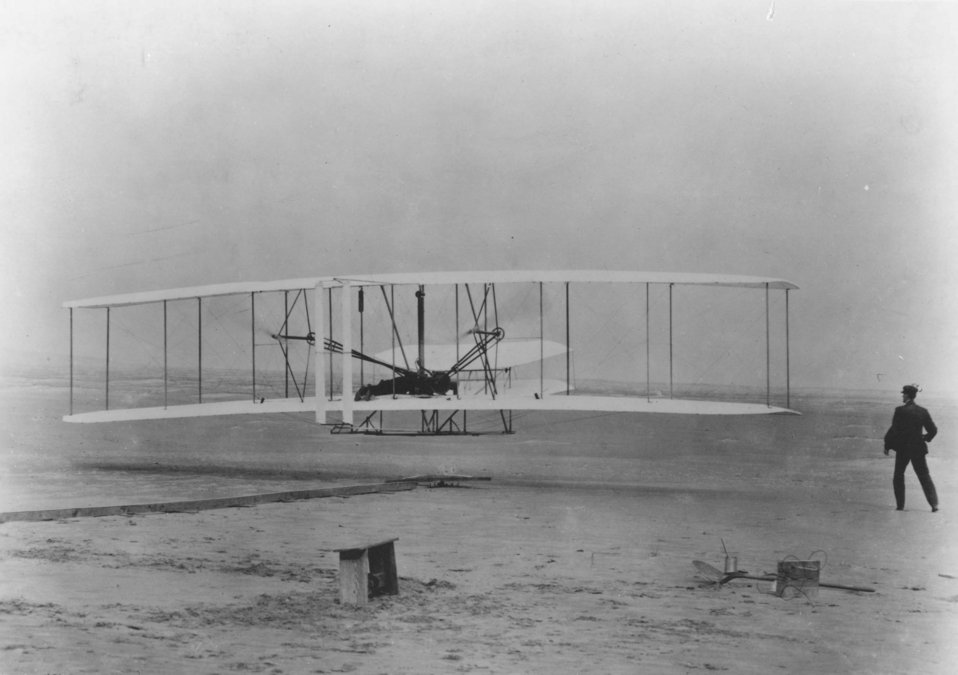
Kitty Hawk, N.C.

EARLY YEARS -- First flight by man with a motor driven, heavier-than-air machine, Kitty Hawk, N.C. -- Dec. 17, 1903